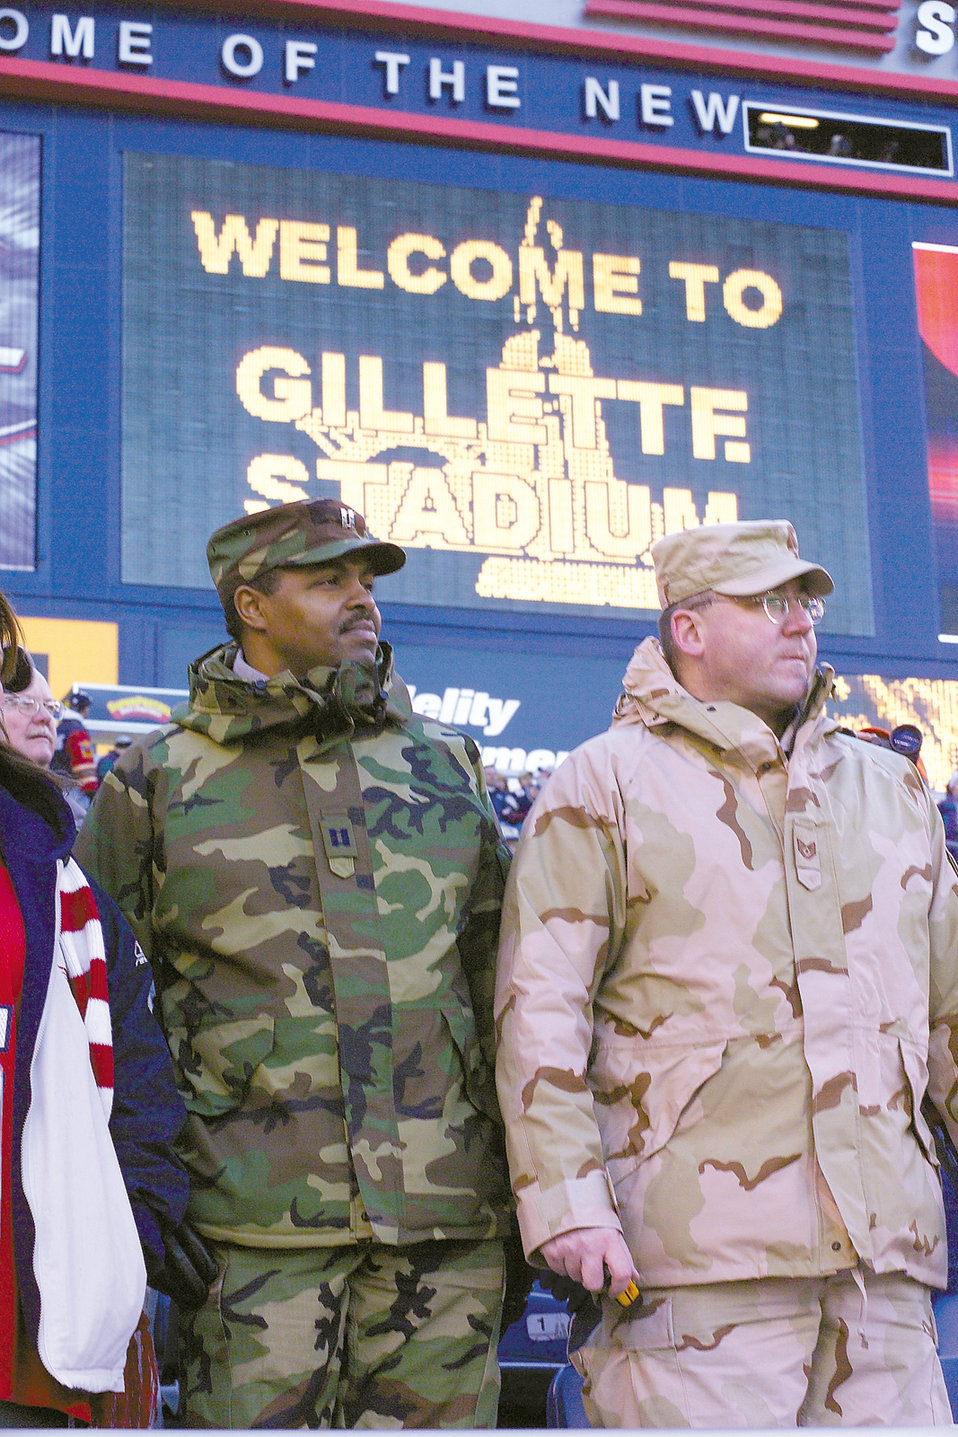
Patriots salute war on terrorism veterans

FOXBORO, Mass. -- Chaplain (Capt.) Ricky Reaves (left) and Tech. Sgt. Michael Robblee watch the New England Patriots football team practice before a game at Gillette Stadium here Dec. 27. The New England Patriots hosted more than 75 servicemembers from all of the U.S. services at the game to show their appreciation for those who deployed overseas supporting operations Enduring Freedom and Iraqi Freedom. Reaves is assigned to the 66th Air Base Wing at Hanscom Air Force Base, and Robblee is assigned to the Electronic Systems Center at Hanscom.